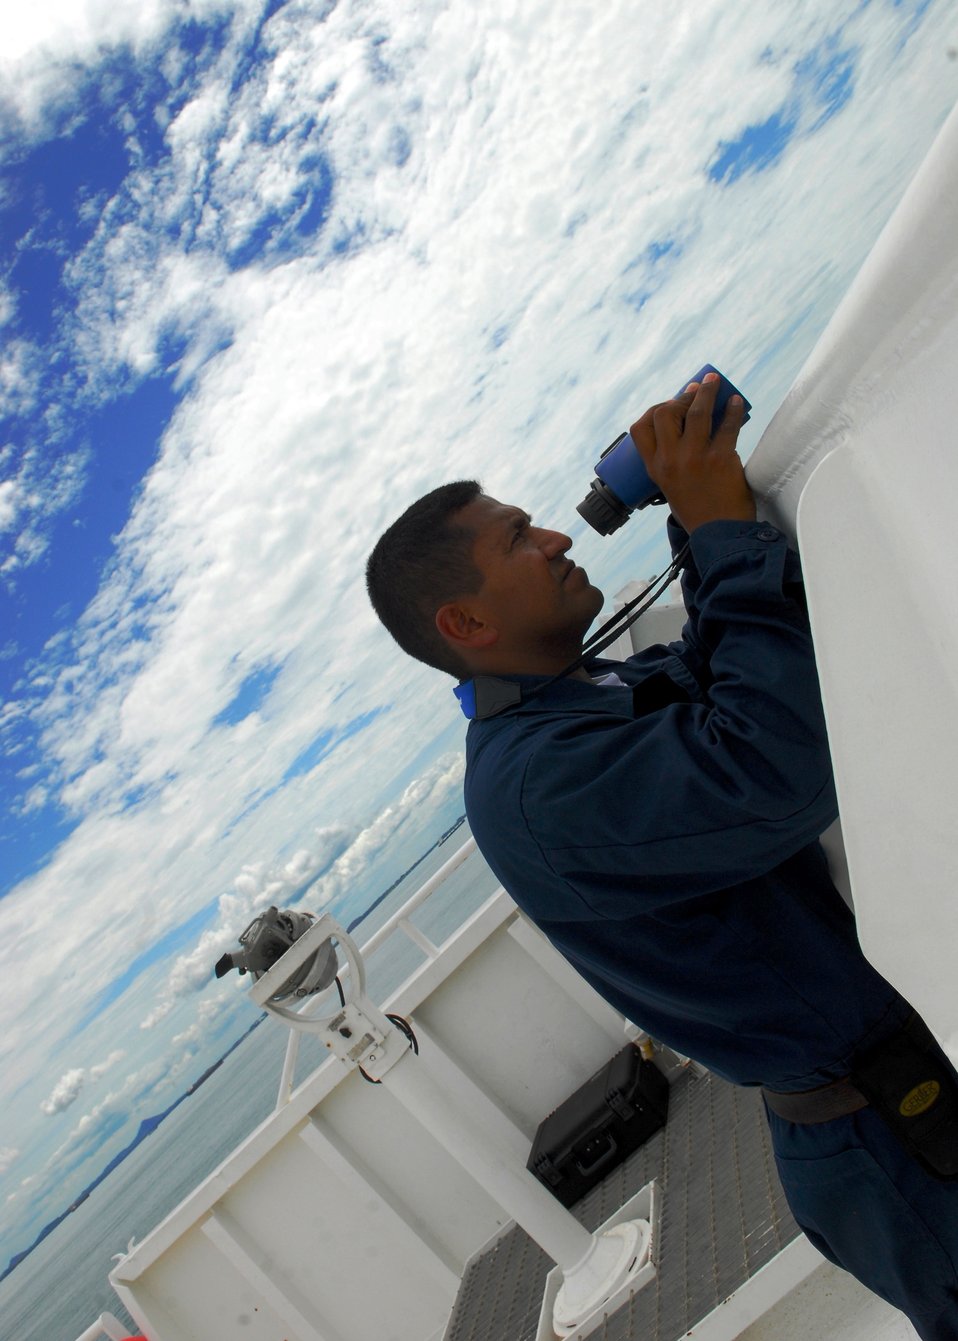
Ordinary Seaman Catalan Looks Through Binoculars

Ordinary Seaman Roberto Catalan, a civilian mariner embarked aboard the Military Sealift Command hospital ship USNS Mercy (T-AH 19), looks through binoculars while Mercy transits the South China Sea on July 5, 2010, en route to Indonesia in support of Pacific Partnership 2010, the fifth in a series of annual U.S. Pacific Fleet humanitarian and civic assistance endeavors to strengthen regional partnerships.